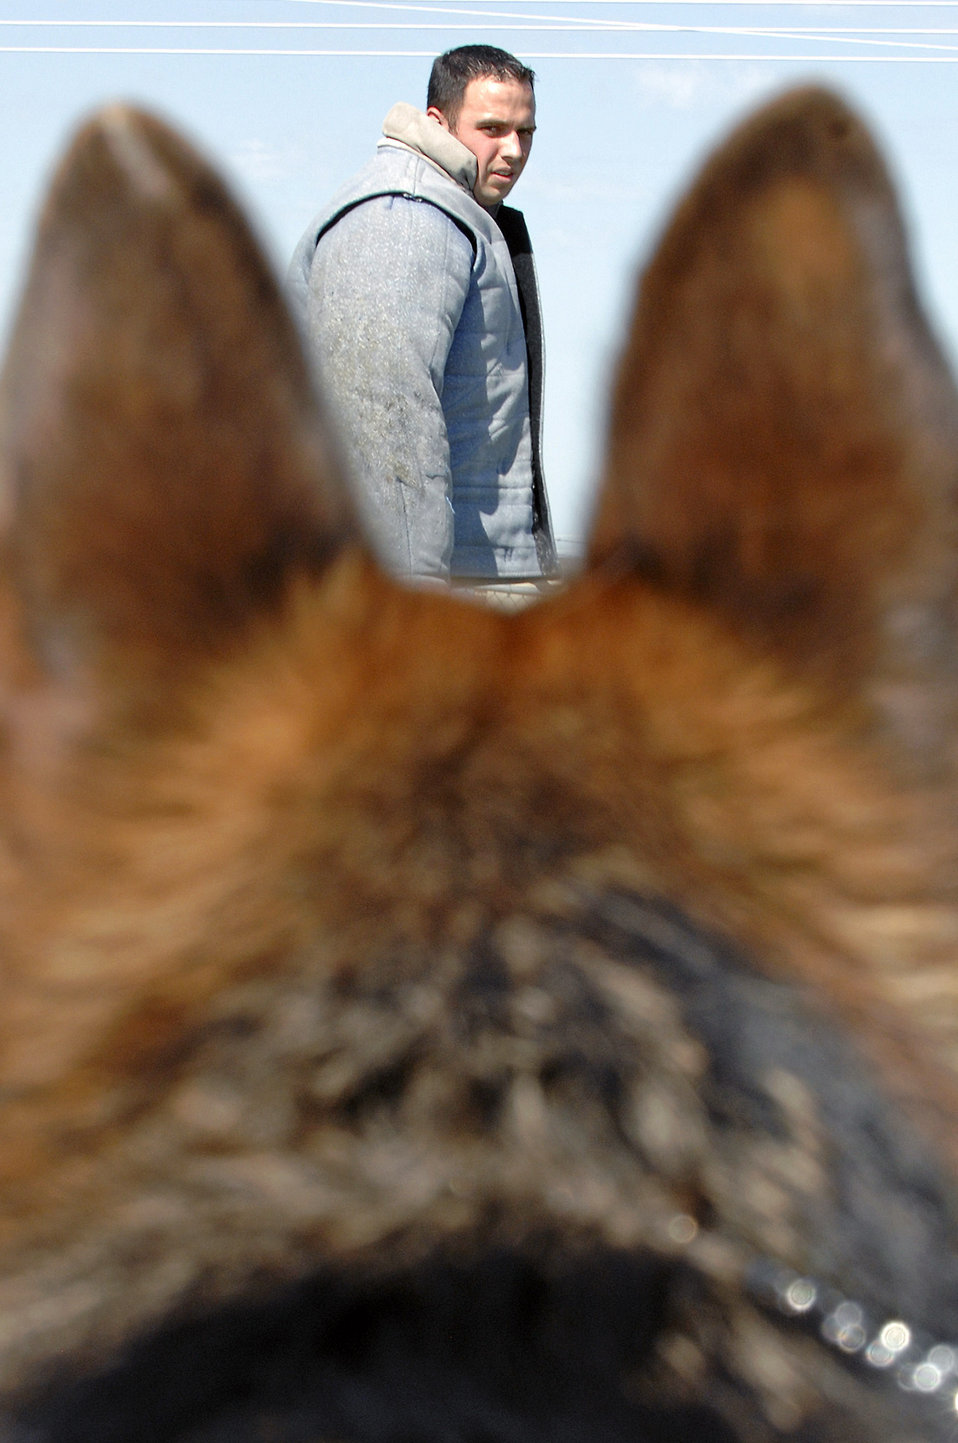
Ready to strike

Rudy, a military working dog, waits for the command to intercept Senior Airman Nathaniel Johnson during controlled aggression training Aug. 13 at Ellsworth Air Force Base, S.D. Airman Johnson is with the 28th Security Forces Squadron.